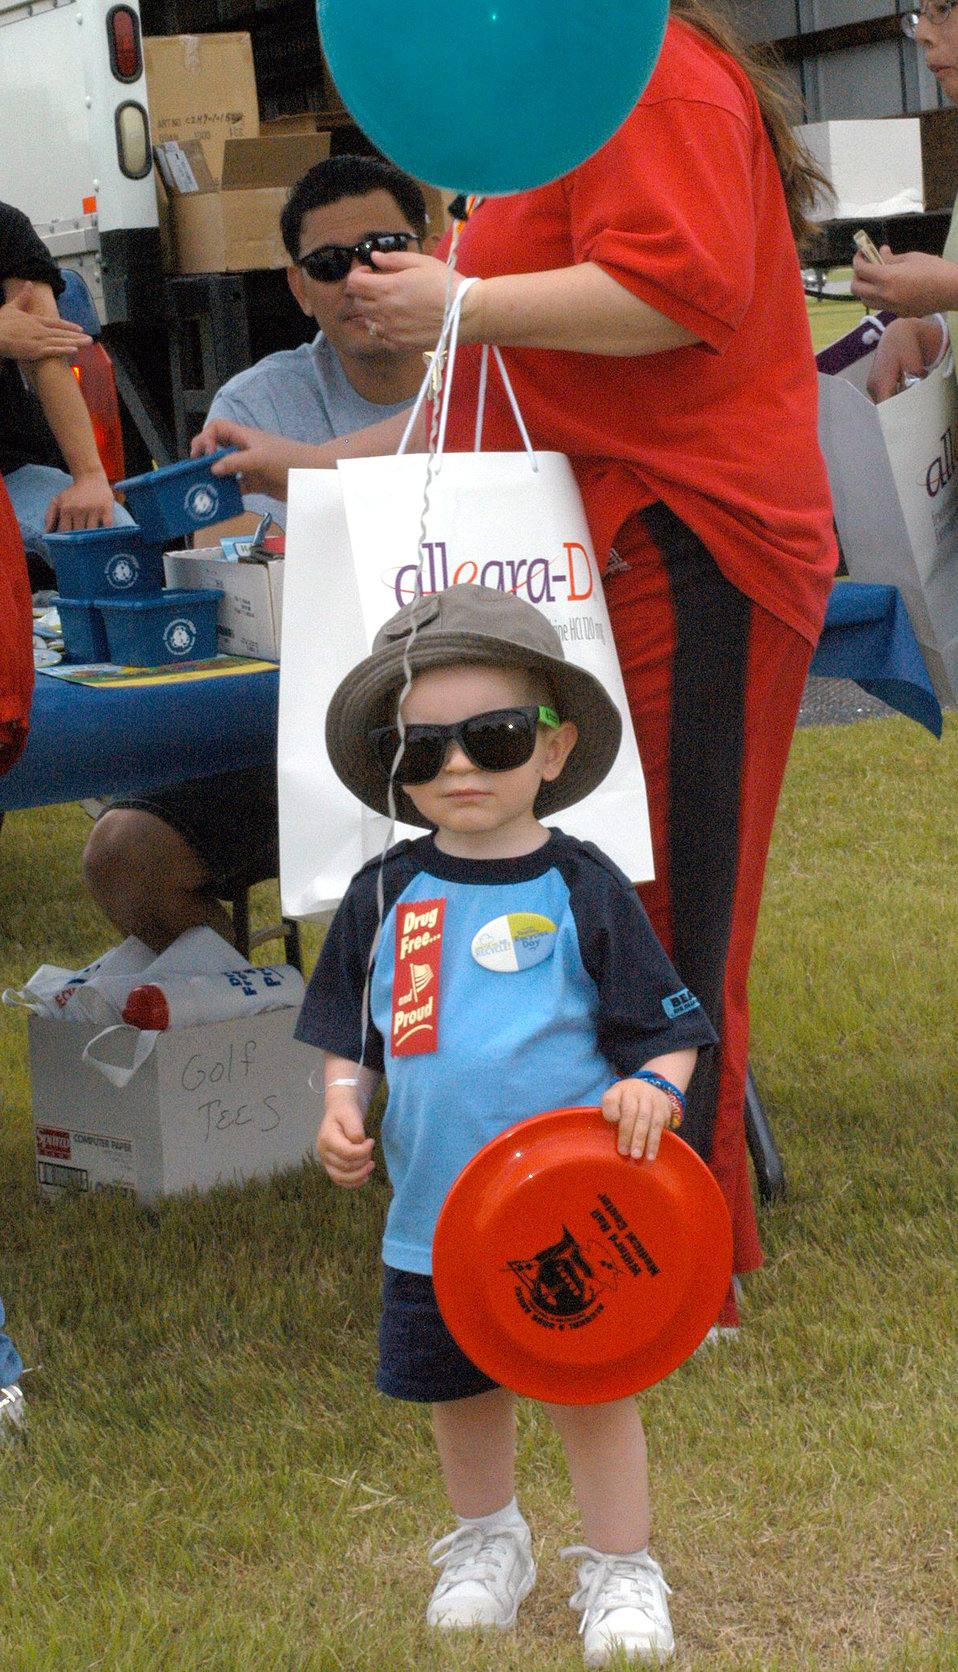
Ready to party!

LACKLAND AIR FORCE BASE, Texas -- Wyatt Campos is decked out for the youth fair activities here. The event recognized Child Abuse Prevention Month and Month of the Military Child. It featured games, food and a car-seat installation demonstration. Wyatt is the son of Staff Sgt. Oscar Campos of the 67th Information Operations Group here.